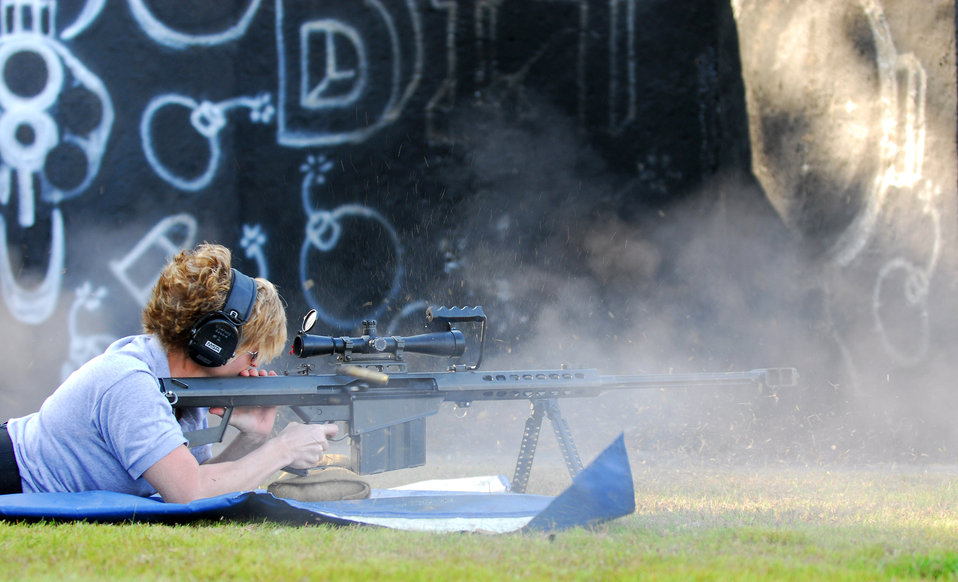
Having a dynamic time

Master Sgt. Tanya Breed fires a Barrett .50-caliber rifle at a target 300 meters downrange during a weapons capabilites demonstration Jan. 9 on the Dynamics of International Terrorism range at Hurlburt Field, Fla. Sergeant Breed shows the crowd capabilites of sniper fire at various targets. The demonstration showed students the capabilities of weapons primarily used by terrorist groups. Students from all branches of the U.S. military participated in the course. Sergeant Breed is assigned to the Air Force Special Operations School.